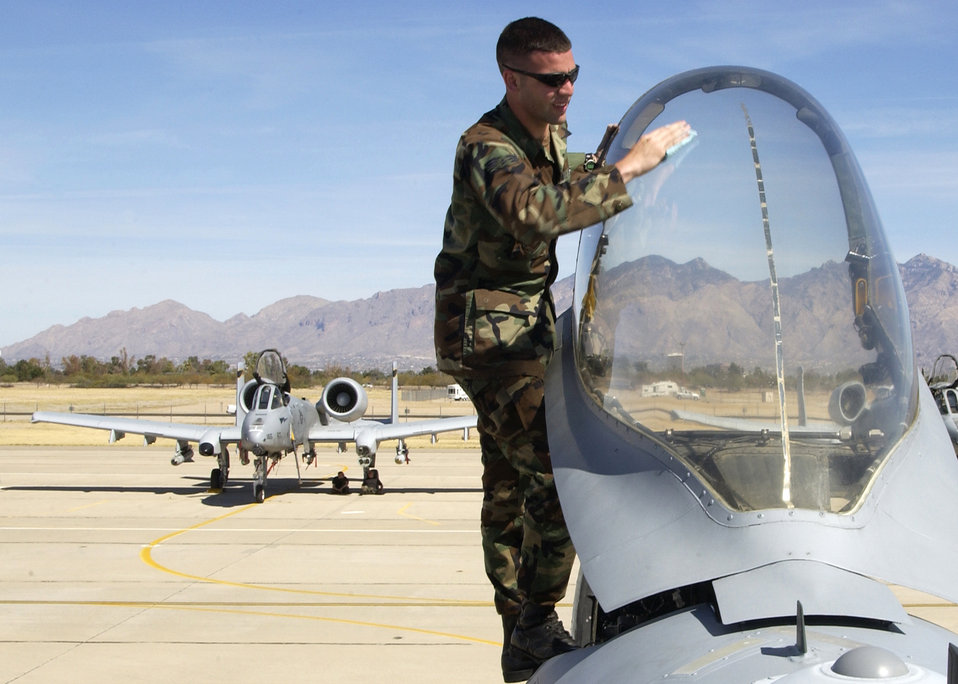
Hawgsmoke

Senior Airman Paul Delgreco maintains the oil of an A-10 Thunderbolt II, Thursday, March 23, 2006, during the 2006 Hawgsmoke competition at Davis-Monthan Air Force Base, Ariz. Hawgsmoke is a biennial worldwide A-10 bombing, missile and tactical gunnery competition. This year's competition coincides with the 30th anniversary of the A-10 rollout in the Air Force inventory. Airman Delgreco is with the 103 Aircraft Maintenance Squadron at Bradley, Conn.